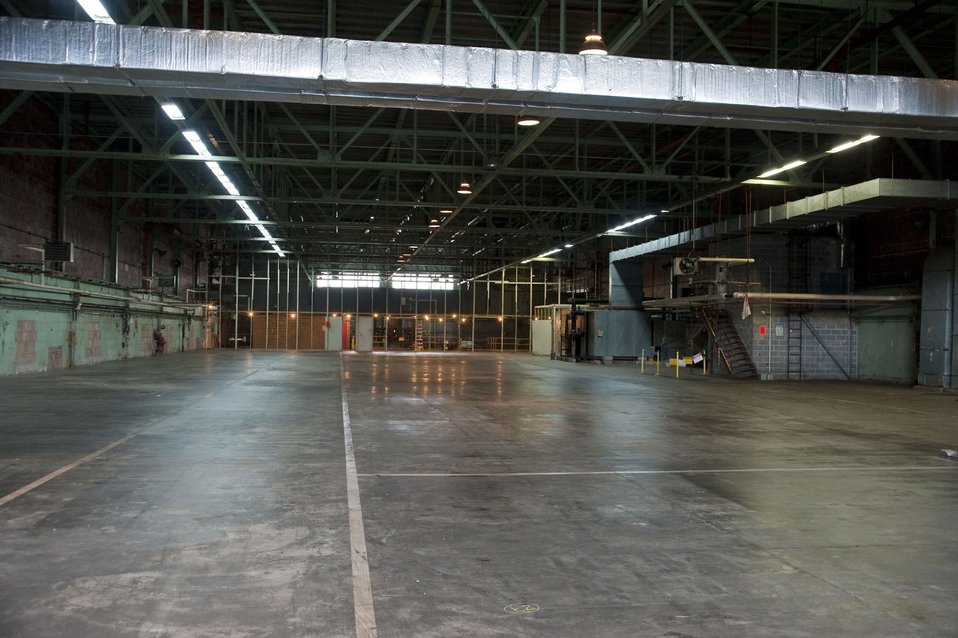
Workers Complete Y-12’s Largest Recovery Act Project Ahead of Schedule

The Y-12 National Security Complex (Y-12)
celebrated the early completion of its largest Recovery Act funded project, emptying all legacy material from Alpha 5. The cleanout of the 613,000-square-foot facility was completed at a cost of about $100 million one month ahead of schedule. Built in 1944, Alpha 5 is the largest building at Y-12, and was formerly used for uranium separation activities.